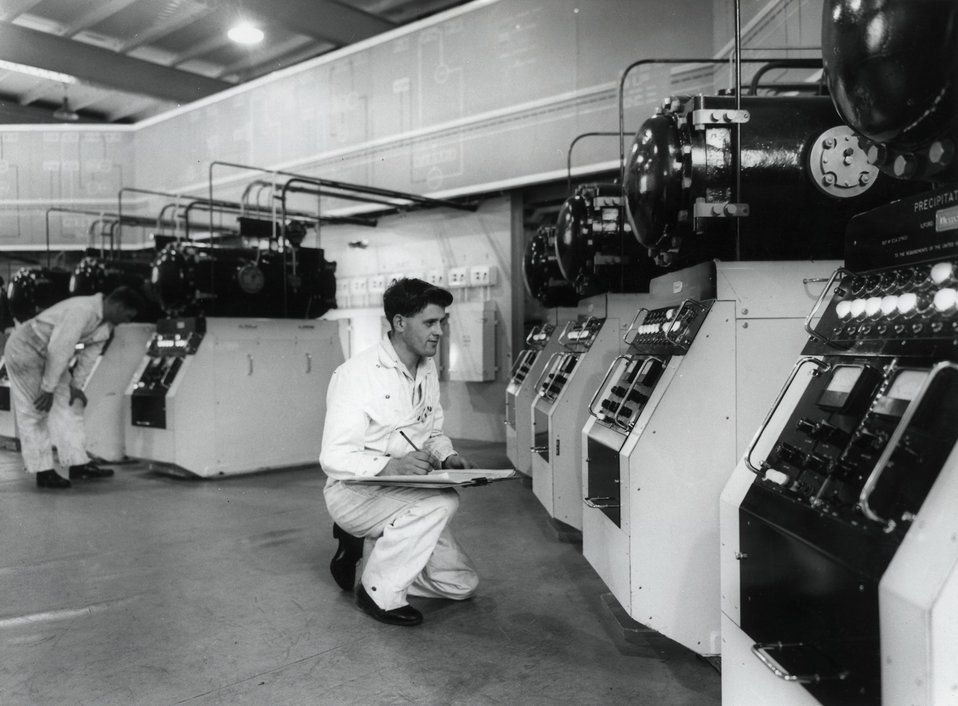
Calder Hall. To prevent serious contamination of the cooling gas by fission products or uranium escaping from a punctured fuel element, the gas flowing through each of the 1500 fuel channels is sampled systematically every 30 minutes by the 'Sniffer Apparatus'. In the picture is Arthur Gate (foreground) and Gilbert McMean, both process workers. c. 1956